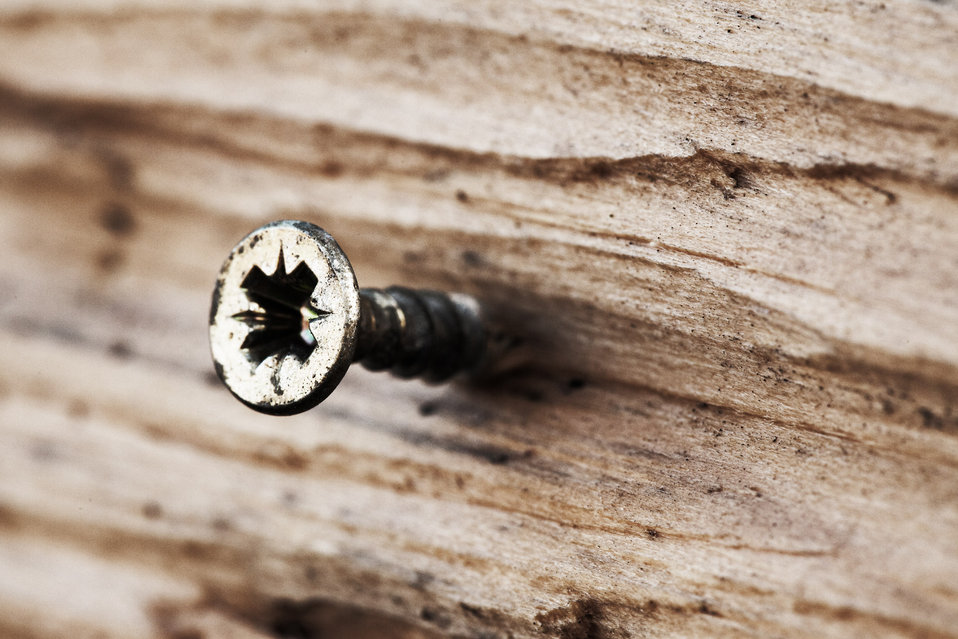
Pozidriv head screw in the wood.